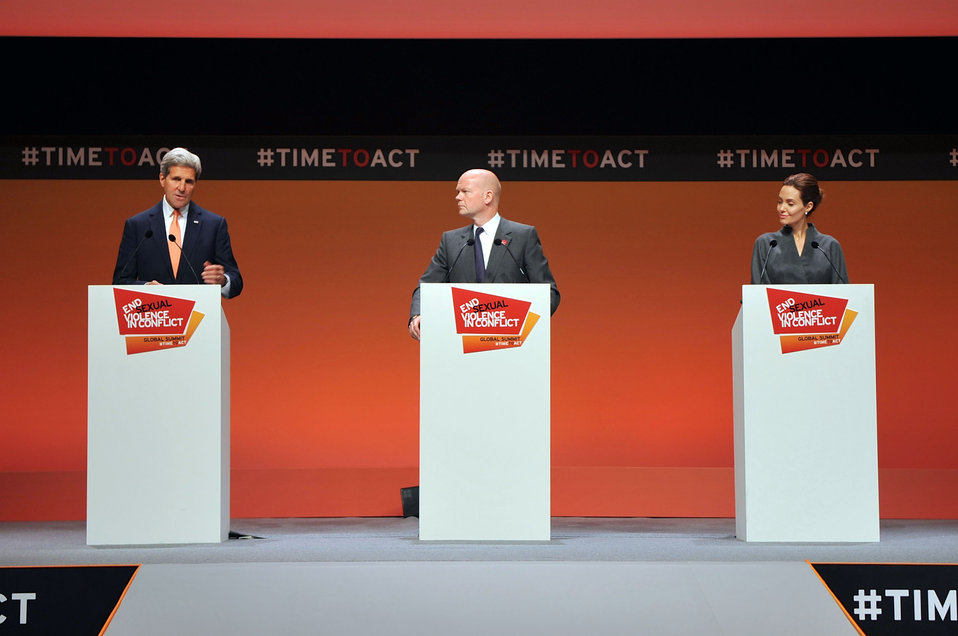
Secretary Kerry Speaks During Sexual Violence News Conference With Secretary Hague, Actress Jolie

U.S. Secretary of State John Kerry addresses reporters during news conference with British Foreign Secretary William Hague and actress and UN Envoy Angelina Jolie at the conclusion of the 2014 Global Summit to End Sexual Violence in Conflict in London on June 13, 2014.